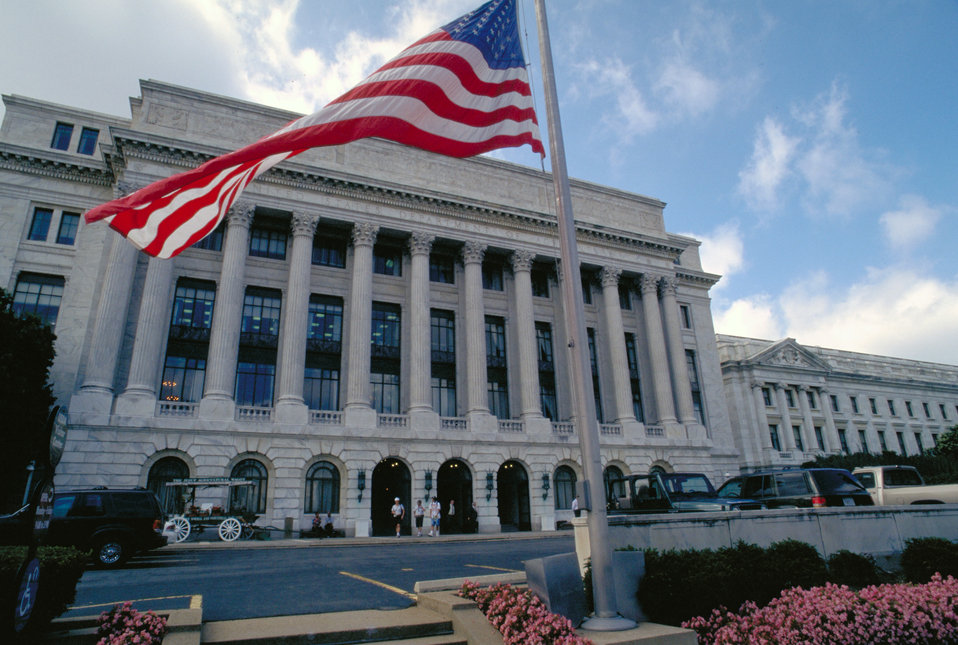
The Jamie L. Whitten, Federal Building, U.S. Department of Agriculture in Washington, D.C.